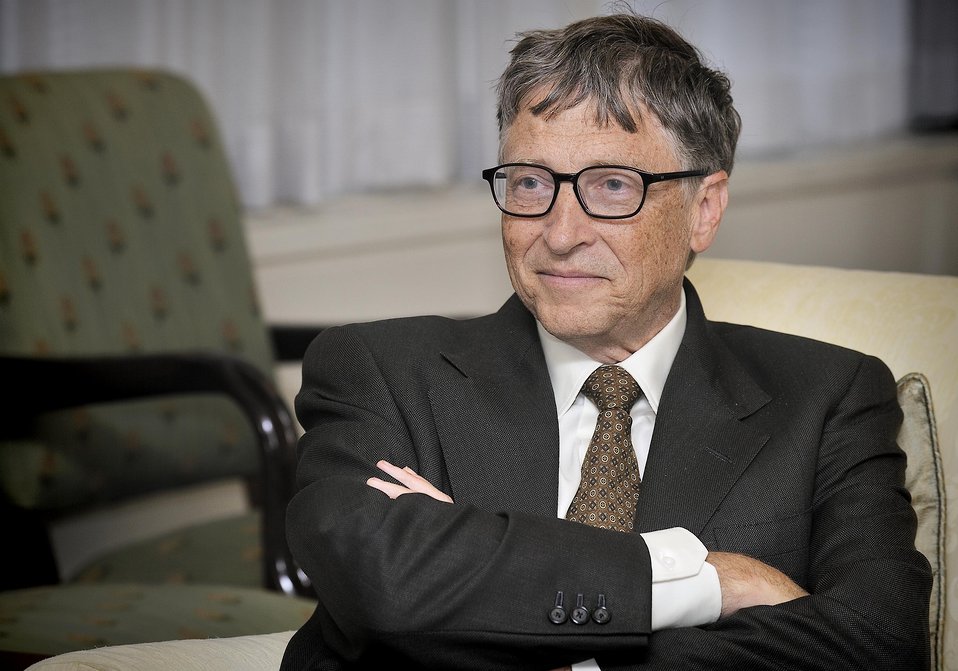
Ken Shipp/DOE Photo